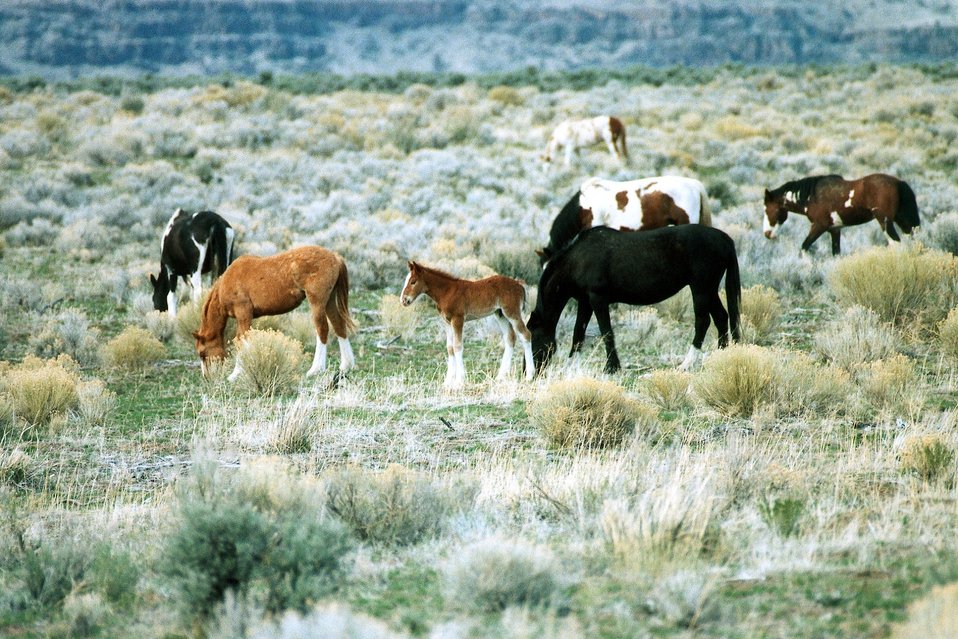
Medium shot of grazing mares and foal.